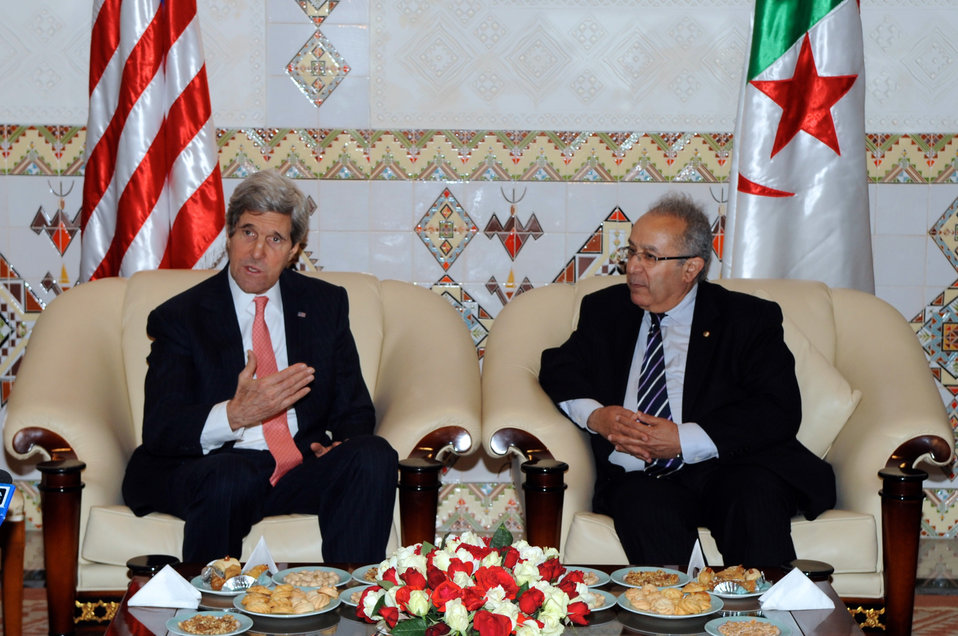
Secretary Kerry Tells Algerian People He Is Looking Forward to Strategic Dialogue

U.S. Secretary of State John Kerry, joined by Algerian Foreign Minister Ramtane Lamamra, tells the Algerian people he is looking forward to a Strategic Dialogue between their country and the United States after arriving in Algiers on April 2, 2014.